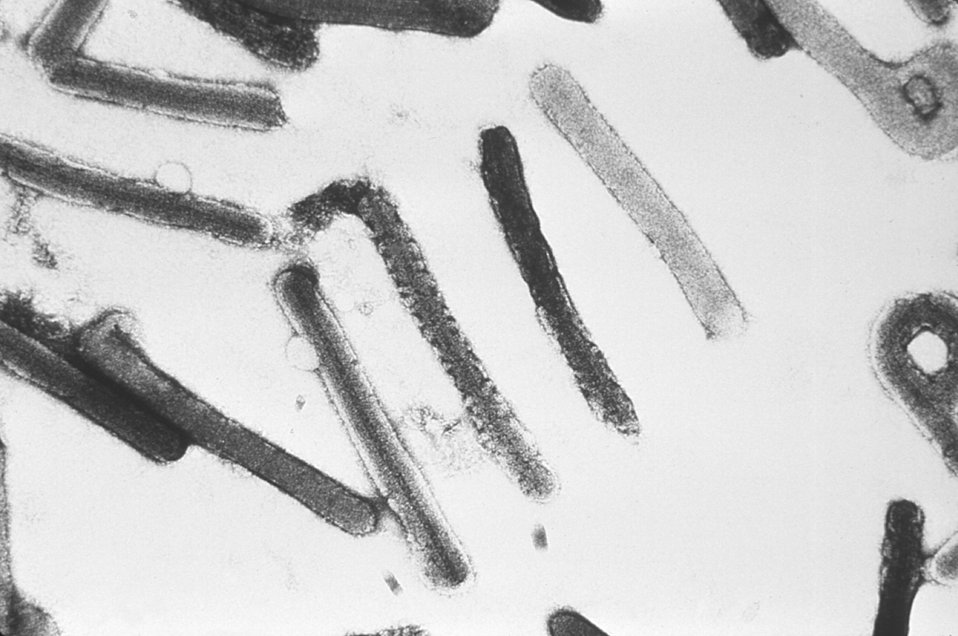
This electron micrograph depicts a number of Marburg virions responsible for causing Marburg Hemorrhagic Fever.